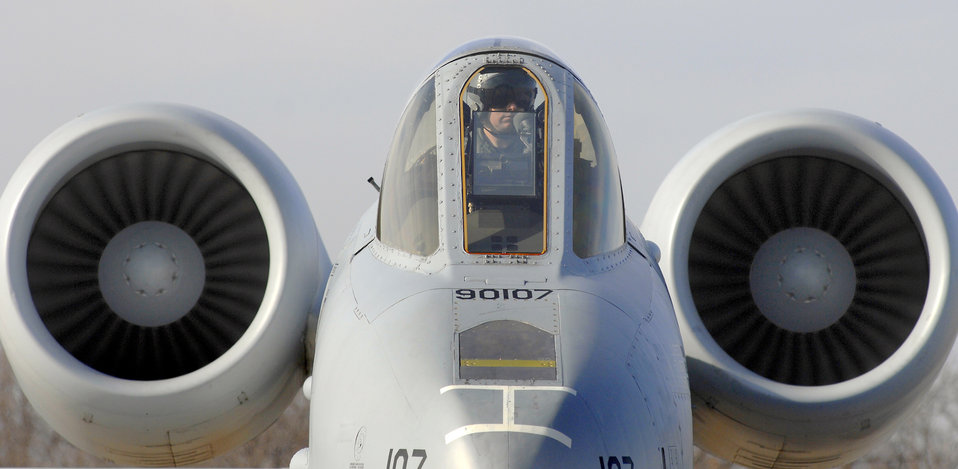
In the 'hot' seat

A pilot with the 442nd Fighter Wing at Whiteman Air Force Base, Mo., sits on the ramp in his A-10 Thunderbolt II while crew chiefs perform a hot pit refuel for his aircraft Dec. 8, 2010. Hot pit refueling is a procedure usually performed in a combat situation to rapidly refuel aircraft while engines are running to speed pilots back into the fight.